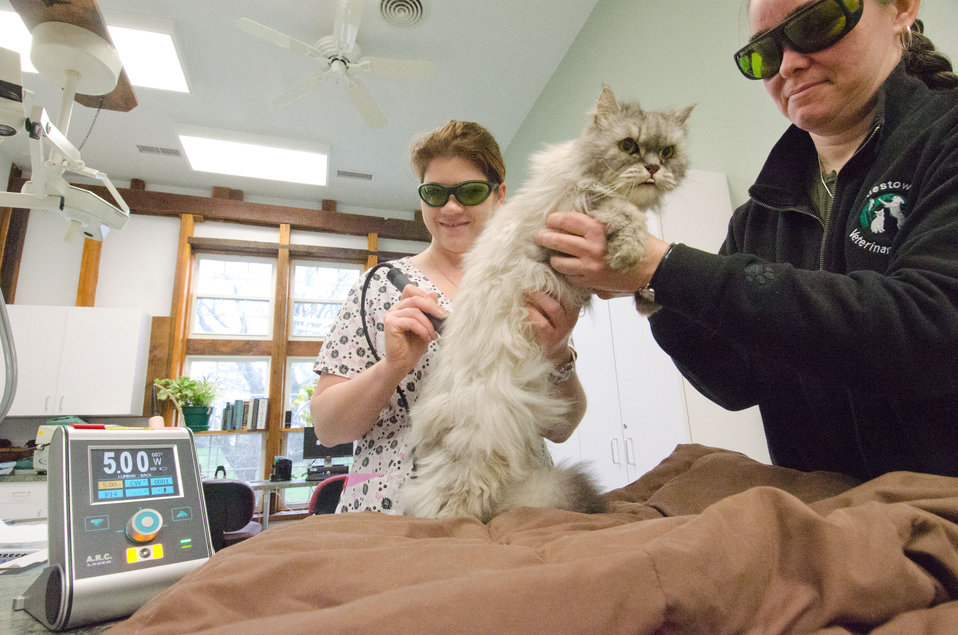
Veterinary technician Rebecca Blevins (left) uses laser light therapy on Molson the cat as Dr. Julie Holland (right) to have calcification of the spine on Tuesday, April 19, 2011 at Littlestown Veterinary Hospital in Littlestown, PA. Through the year it is expected that 30-40% of the electricity to run the diagnostic equipment, lights, laser, computers, any thing electrical will be generated from the 105 solar panels that were installed on the roof in mid September 2010. The hospital, received a grant from the U. S. Department of Agriculture, Rural Development under the Rural Energy for America Program (REAP) to have solar panels installed to help reduce their carbon footprint and to have cost effective electric power for the hospital. REAP provides grants for energy audits and renewable energy development assistance. The program also provides funds to agricultural producers and rural small business to purchase and install renewable energy systems and make energy efficiency improvements.